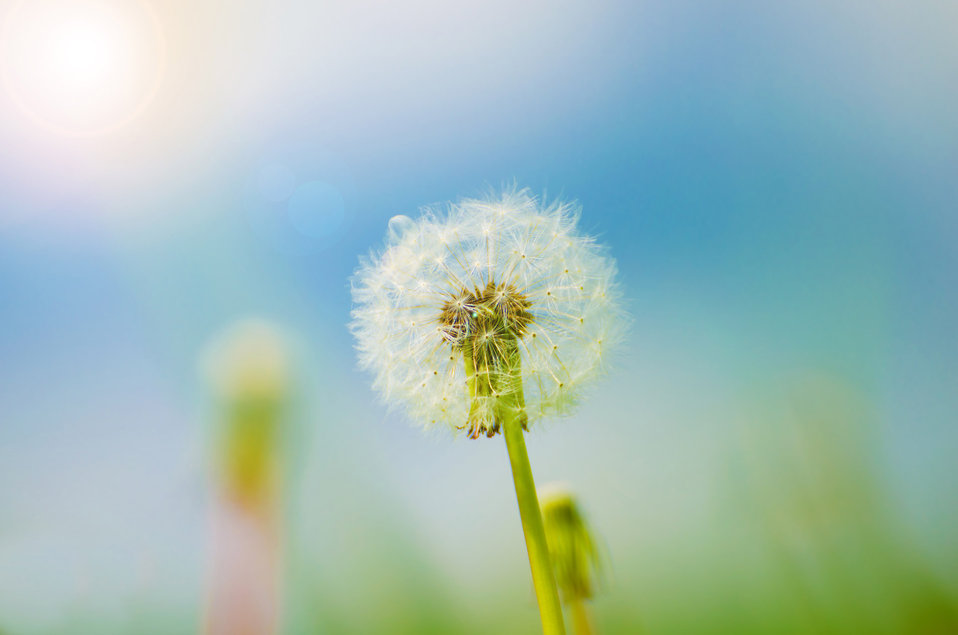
Dandelion

Summer dandelion.